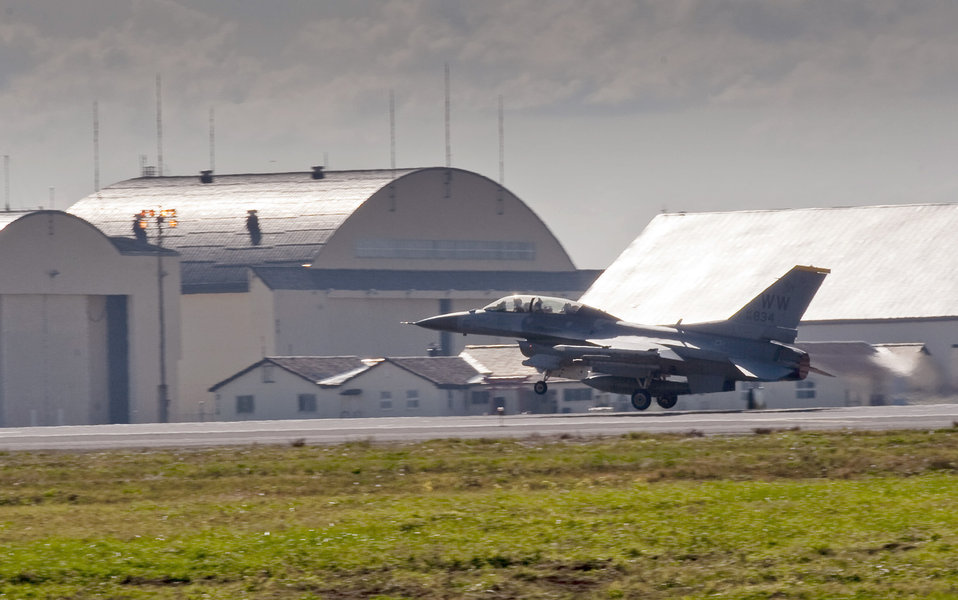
Misawa Airmen earns flight of his life

Capt. Chris Nations, 14th Fighter Squadron standardization and evaluations officer, and Staff Sgt. Bernard Mutz, 35th Civil Engineer Squadron readiness and emergency manager, take off in an F-16 Fighting Falcon at Misawa Air Base, Japan, Oct. 22, 2010. Sergeant Mutz earned the flight for his outstanding service as part of the 35th Fighter Wing’s incentive flight program